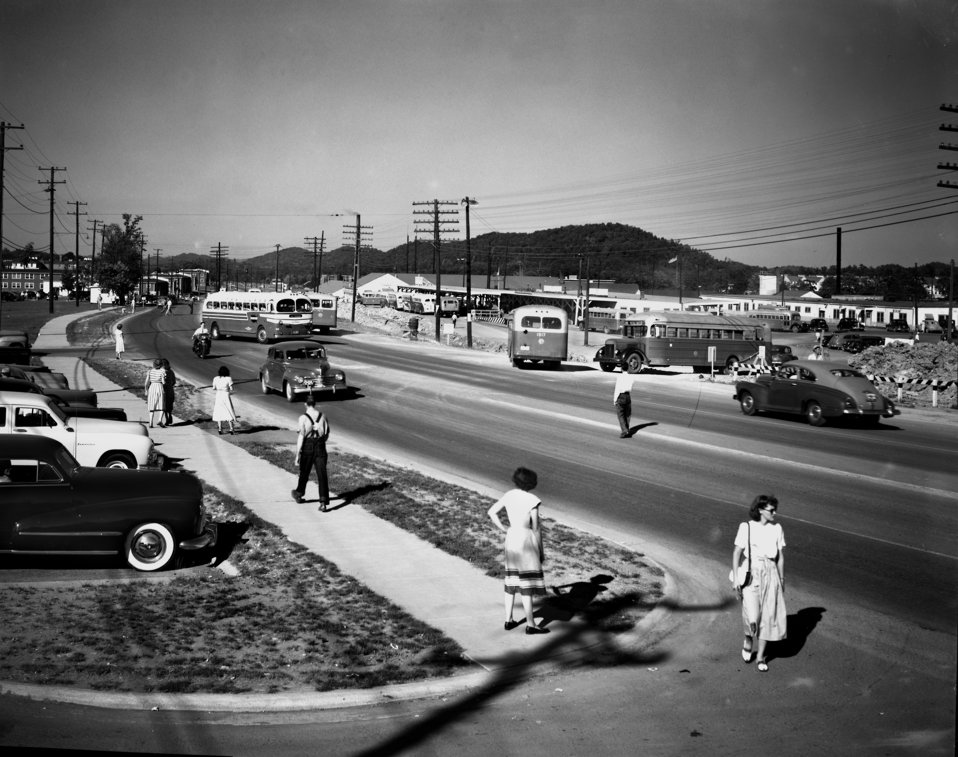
Central Bus Terminal Oak Ridge 1949

5679-6 DOE photo Ed Westcott 7-26-1949 Oak Ridge Tennessee